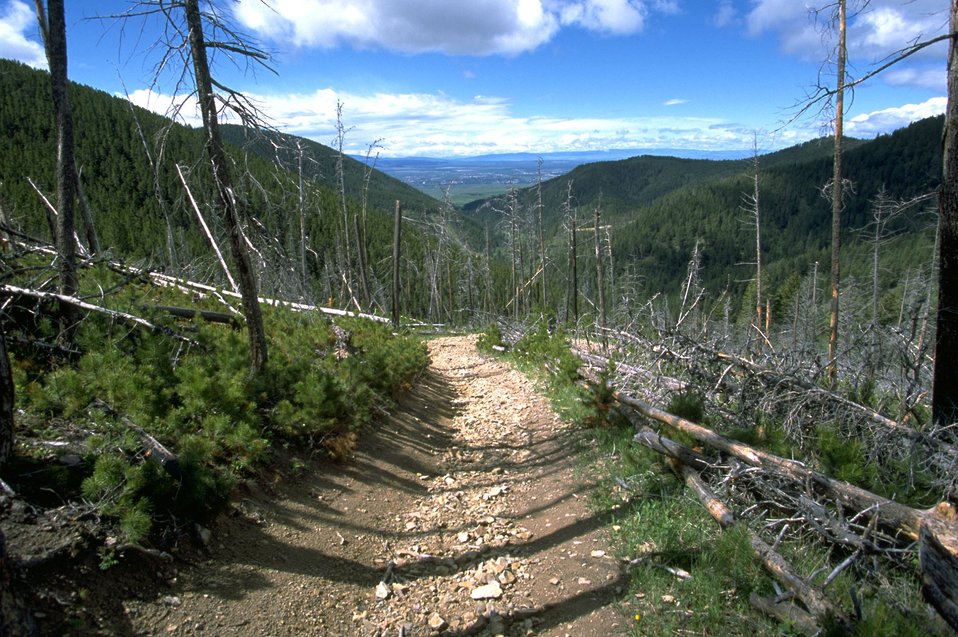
A closed dozer trail in an old burn area